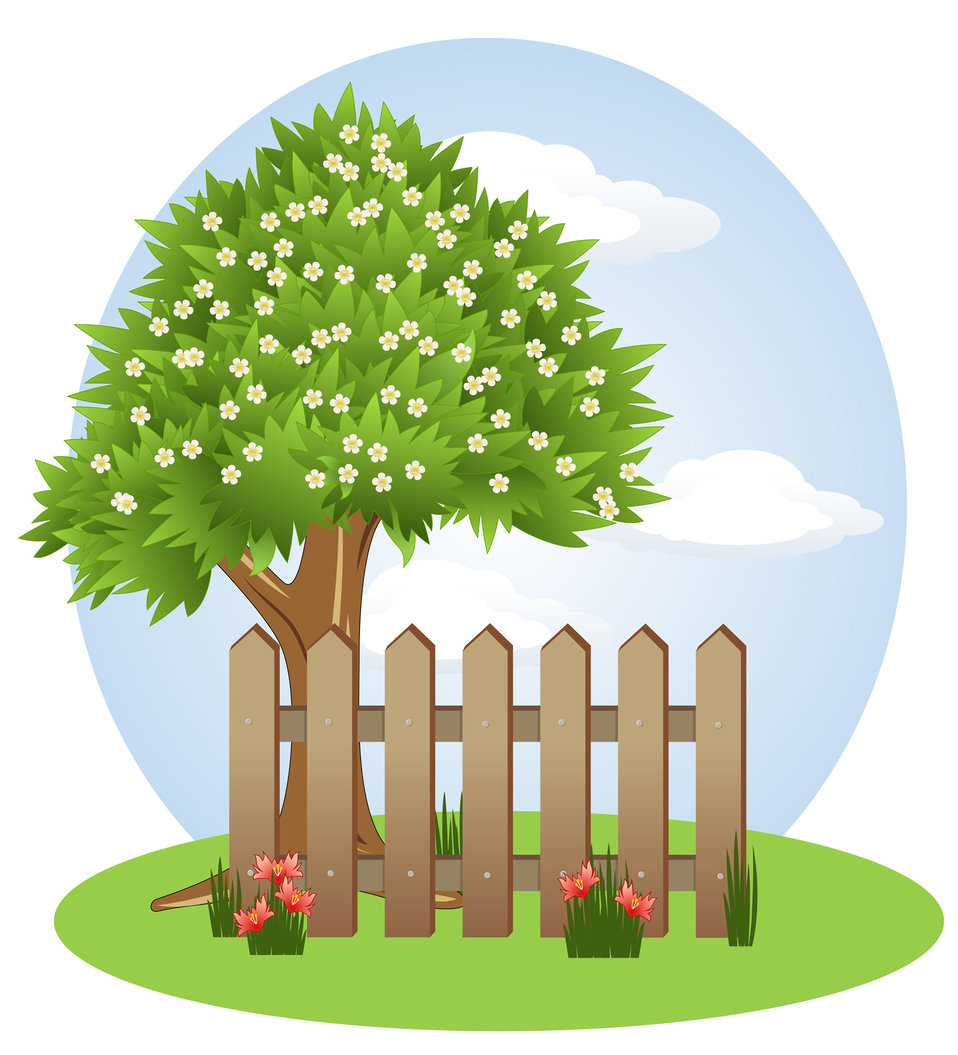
Vector background

Abstract vector background "seasons".